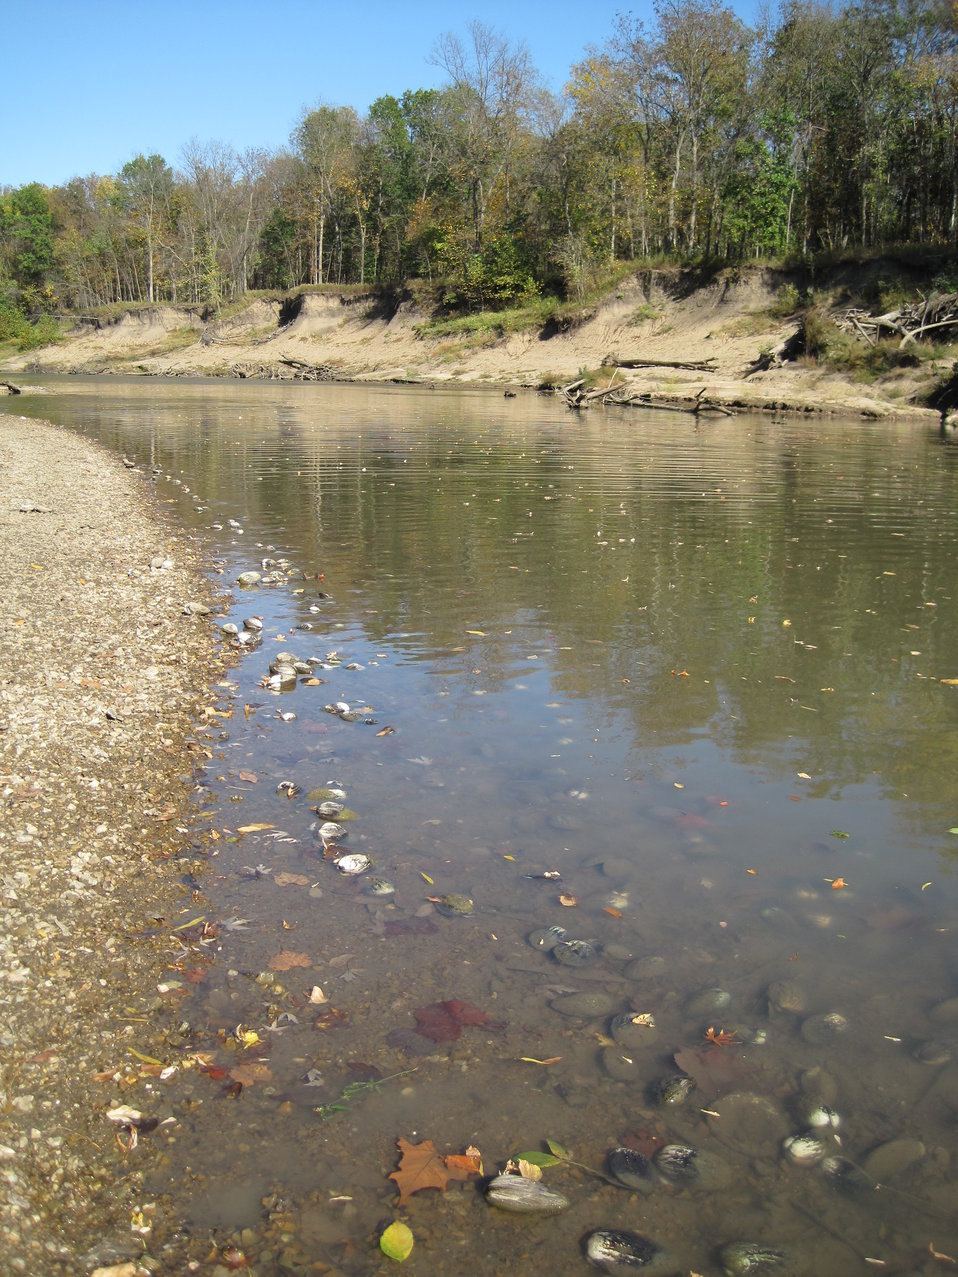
Mussel Bed Loaded with Mussels on the Bank of the Marais des Cygnes River

October, 2011.